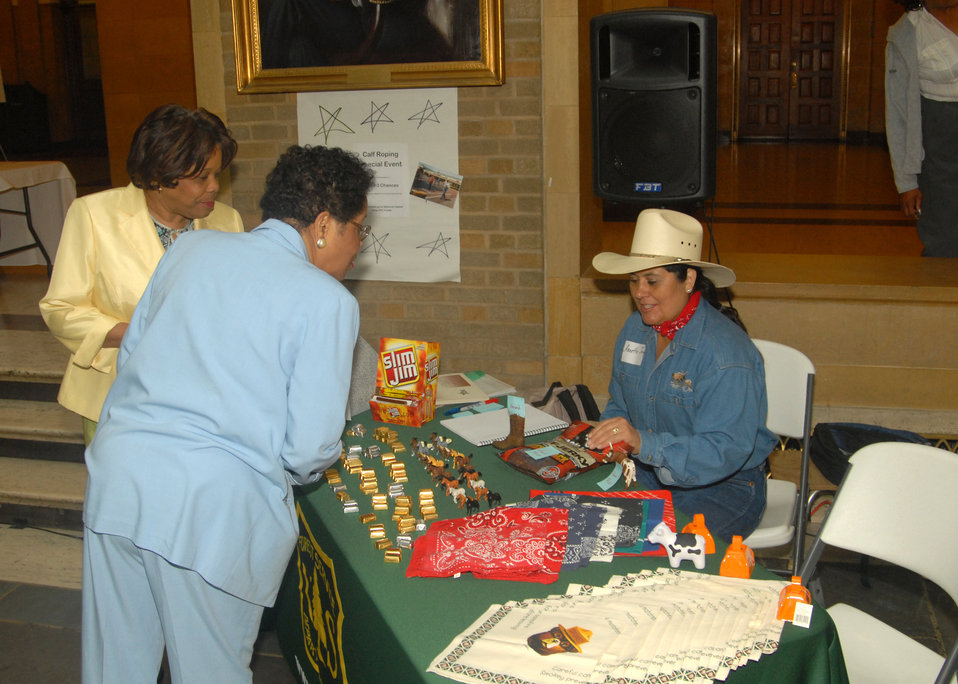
U.S. Department of Agriculture (USDA) employees Vivian Thomas and Mocile Trotter attend the U.S. Department of Agriculture’s (USDA) opening ceremony for the 2012 Combined Federal Campaign on Tuesday, Sept. 18, 2012 at the USDA Whitten Building, in Washington, D.C. USDA has set a goal of raising just under $2 million from their employees in the national capital area. The theme for this year’s CFC campaign is “Choose Hope”.